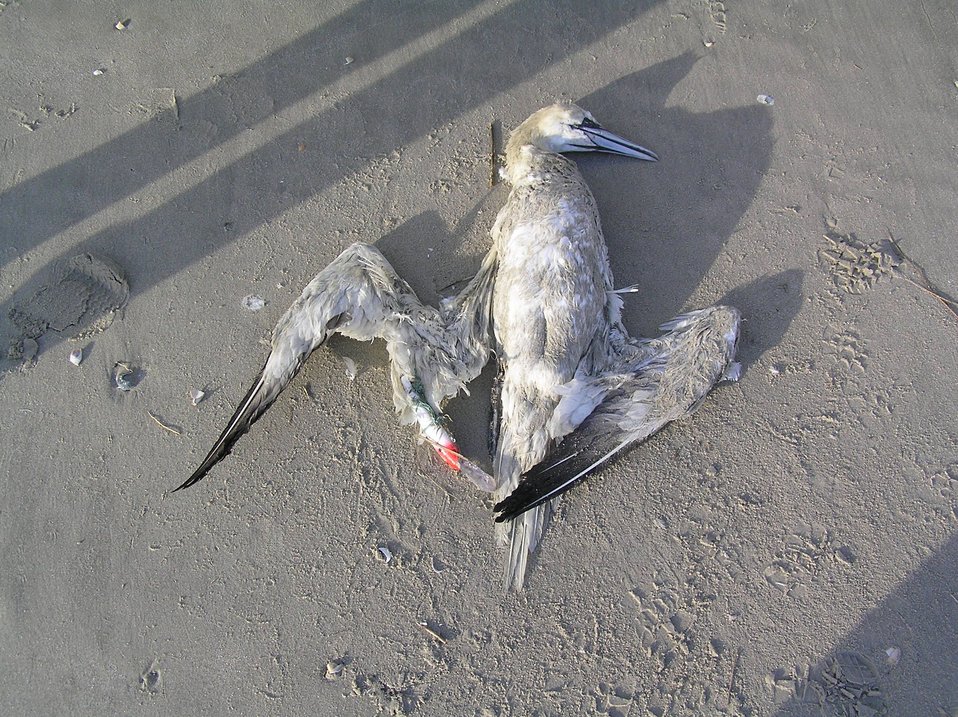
Gannet in fishing line

Eastern shore of Virginia Refuge.